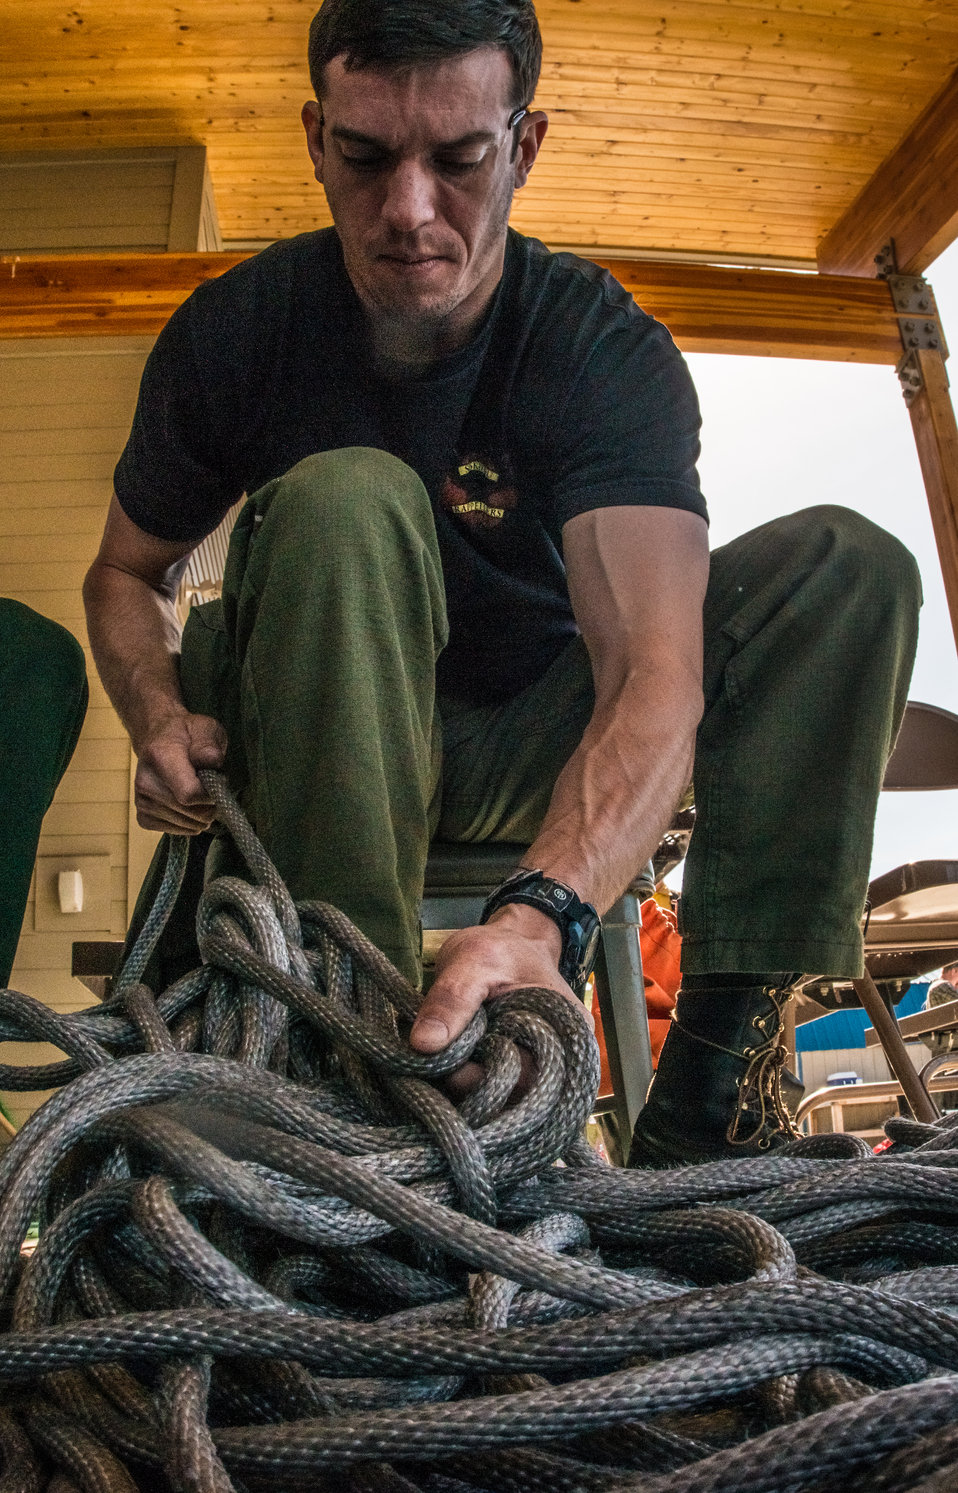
Veteran wildland firefighter rappellers untangle, inspect, repair and log every use of the specialized rope they use to descend from hovering helicopters into forested and rugged terrain at the U.S. Department of Agriculture (USDA) U.S. Forest Service (USFS) National Helicopter Rappel Program’s Rappel Academy at Salmon Air Base in Salmon, ID on Wednesday, May 14, 2014. After every rappel, the rope is dropped from the helicopter and then brought back to the helibase that is hosting rappel operations. From May 12, 2014, 72 veteran rappellers from all over the nation, 30 support staff, and three helicopters with flight crews attend the training at Salmon Air Base. Participants will rappel into the Perreau Creek area. The annual training is delivered in accordance with the National Rappel Operations Guide; strengthen leadership, teamwork, and communications within the rappel community, and produces quality aerial delivered firefighters for use in fire and aviation operations. The USDA Forest Service National Helicopter Rappel Program’s primary mission is initial attack. Rappel crews may be utilized for large fire support, all hazard incident operations, and resource management objectives.